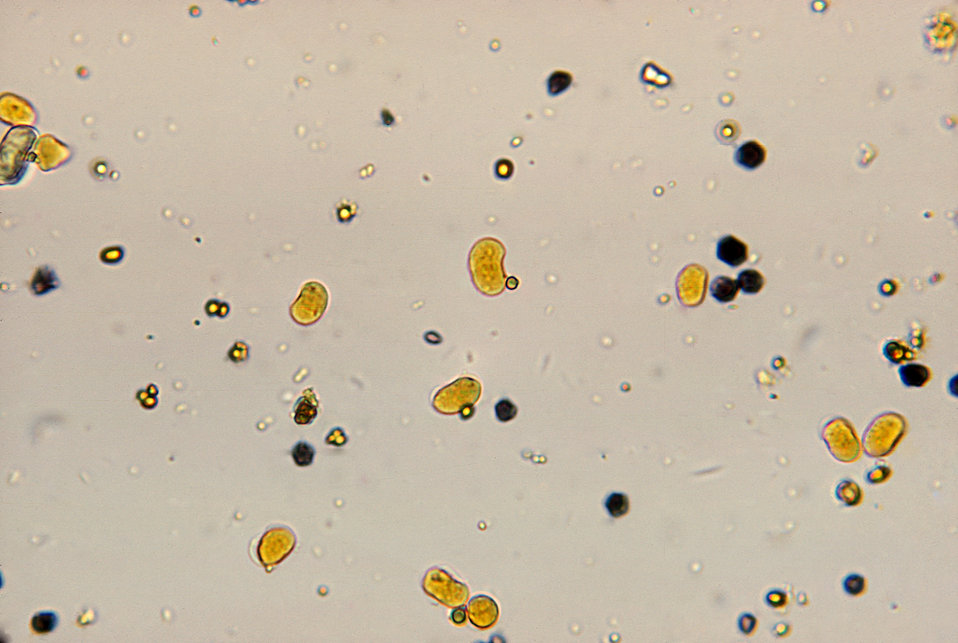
Endolimax nana cysts. Iodine stain.